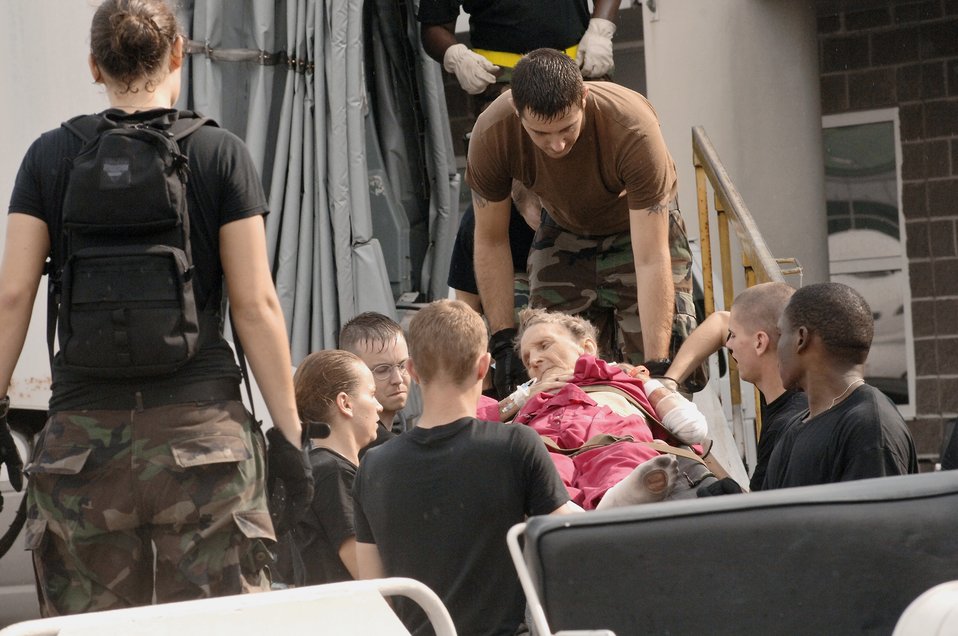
433rd Airlift Wing Airmen learn from Katrina

Medics from the 433rd Aeromedical Evacuation Squadron at Lackland Air Force Base, Texas, and the 375th Medical Group from Scott Air Force Base, Ill., prepare patients for evacuation at the Louis Armstrong International Airport in New Orleans Sept. 1, 2005.